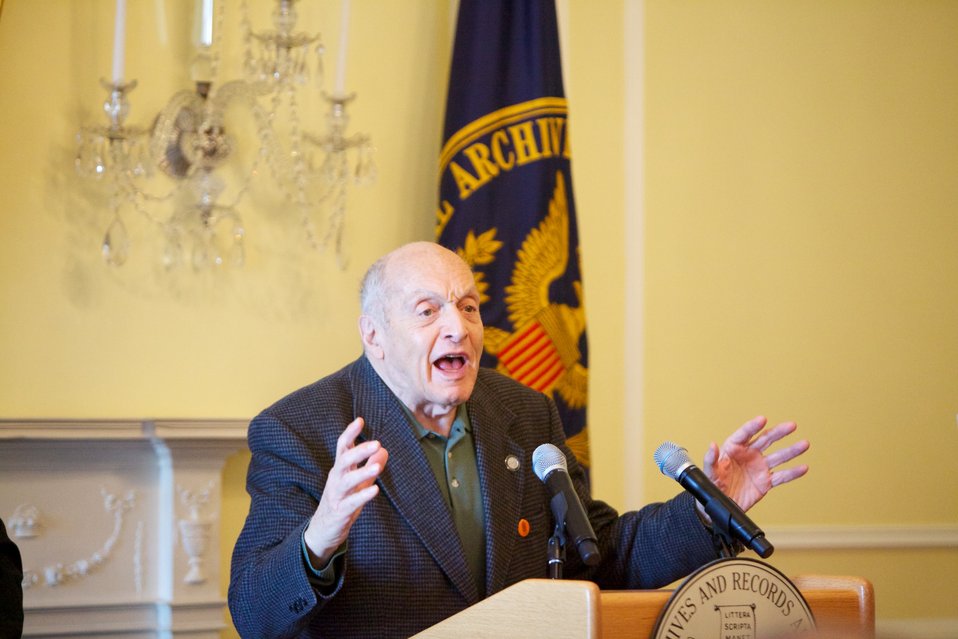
Hitler Album Donation Event